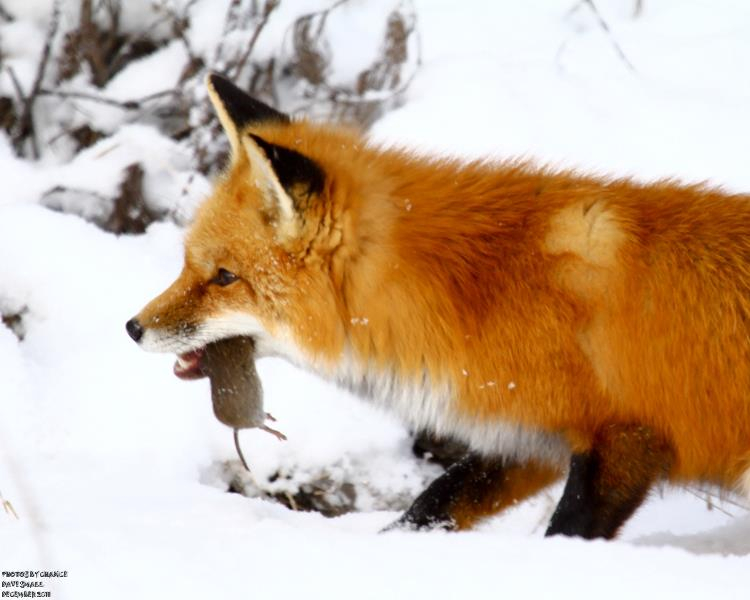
red fox

On Jan. 3, 2012, photographer Dave Small witnessed a red fox hunting in snow at Sunkhaze Meadows National Wildlife Refuge in ME.